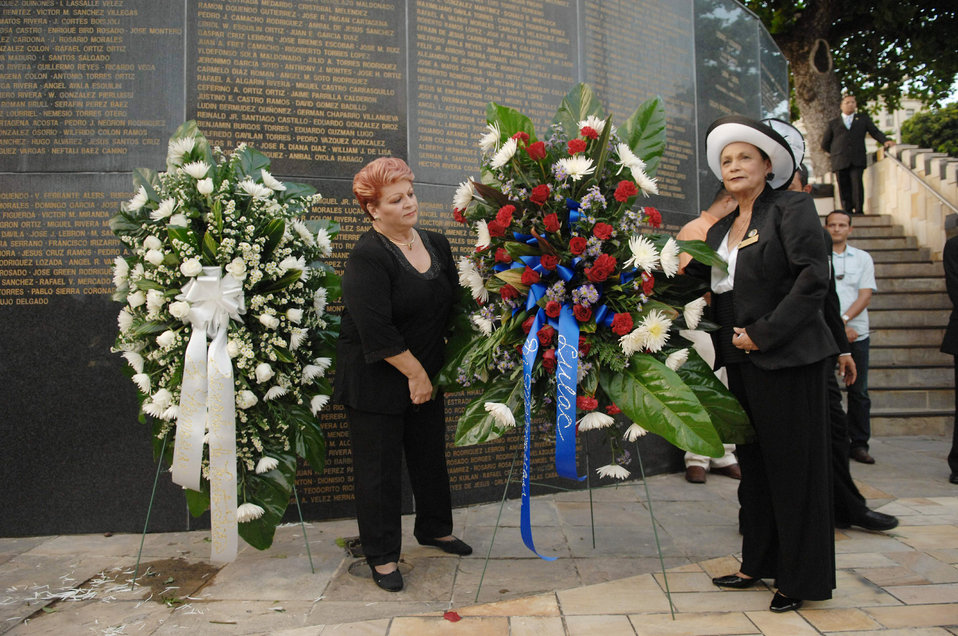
Reservists honor fallen servicemembers

The League of United Latin American Citizens Puerto Rico State Director Haydee Rivera (left) and LULAC National President Rosa Rosales place a wreath at the El Capitolio 's El Monumento de la Recordacion during the Memorial Wreath Laying Ceremony in Old San Juan, Puerto Rico, the location of the 2009 League of United Latin American Citizens convention and exposition July 14 at San Juan, Puerto Rico. LULAC is the nation's oldest and largest Hispanic organization advocating for Latinos in the United States for 80 years.